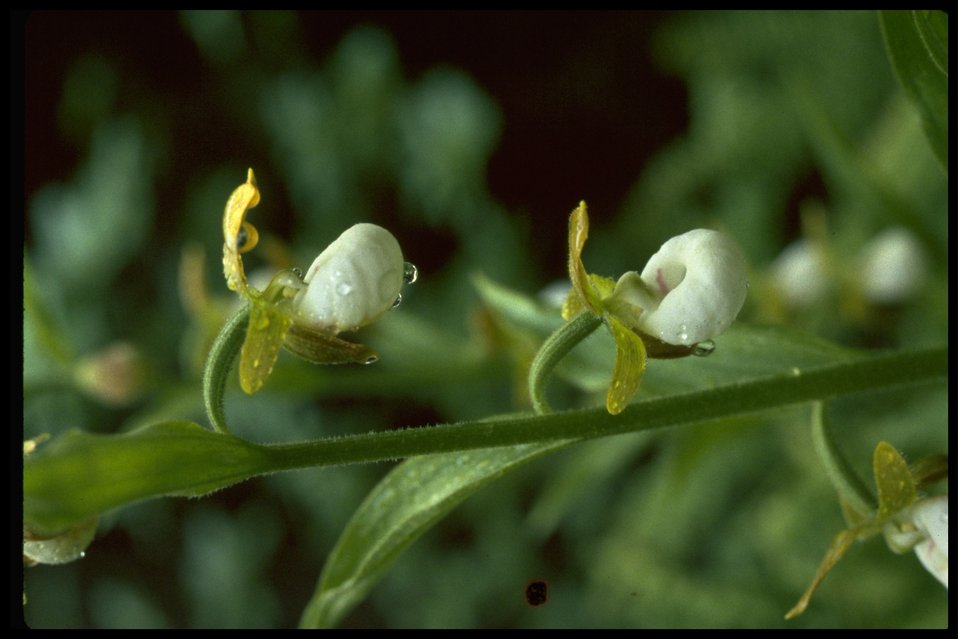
Cypripedium californicum, commonly known as California Lady's Slipper.